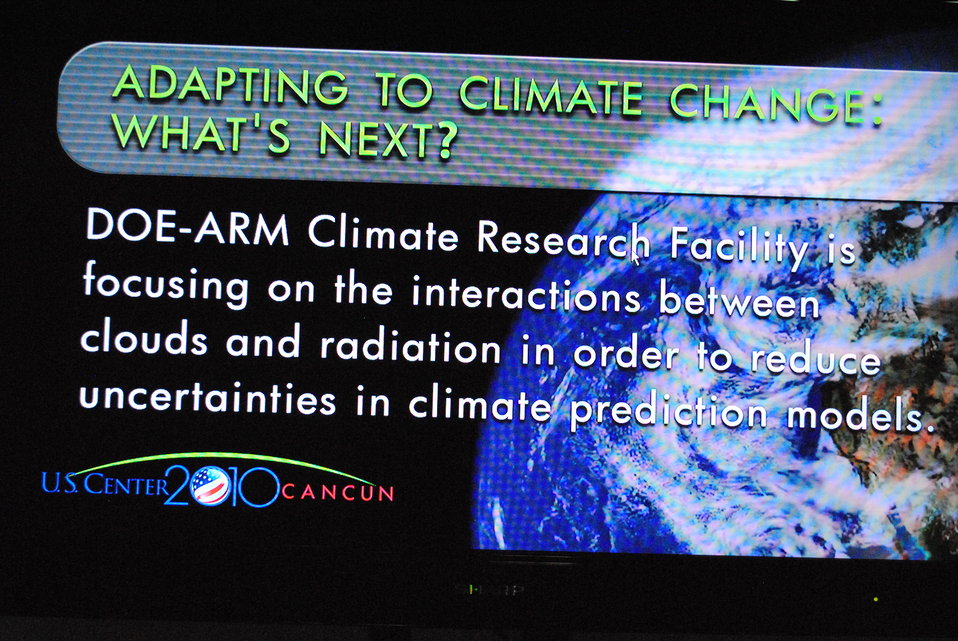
U.S. Scientists Present 'Climate Change Research Program in the United States'

Scientists present the side event, 'Climate Change Research Program in the United States,' at the U.S. Center at COP-16 in Cancun, Mexico, on November 30, 2010.